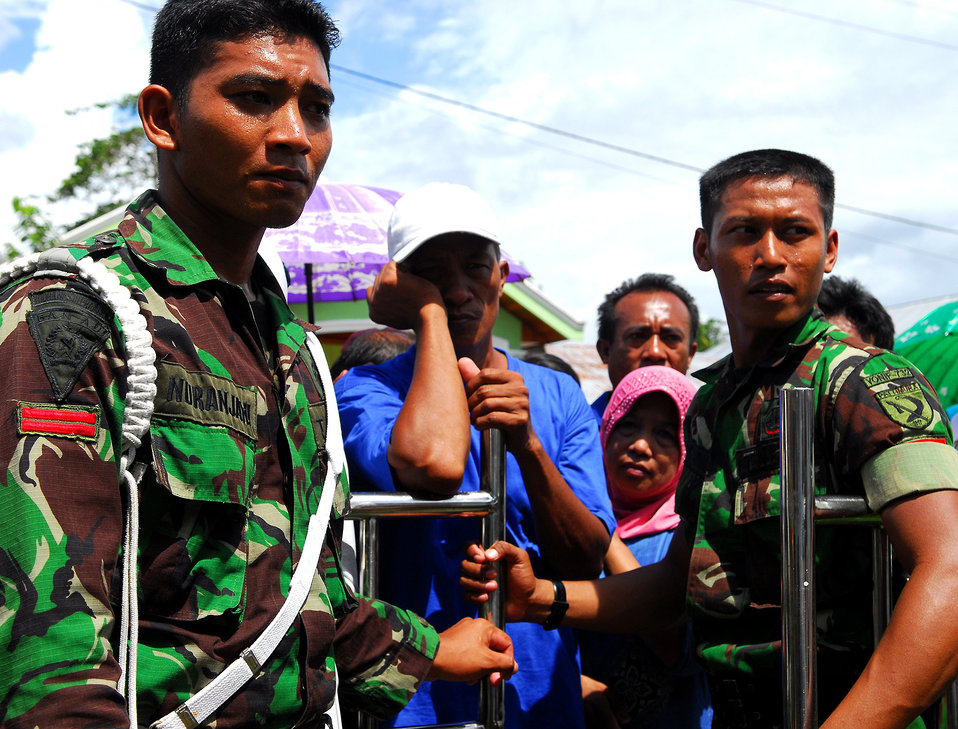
Indonesian military police wait to allow more patients through the gate during a medical civic action program in Sofifi, Indonesia, on July 20, 2010. Mercy is in the North Maluku Islands conducting Pacific Partnership 2010, the fifth in a series of annual U.S. Pacific Fleet endeavors conducted in Indonesia as a disaster relief exercise aimed at strengthening regional partnerships.